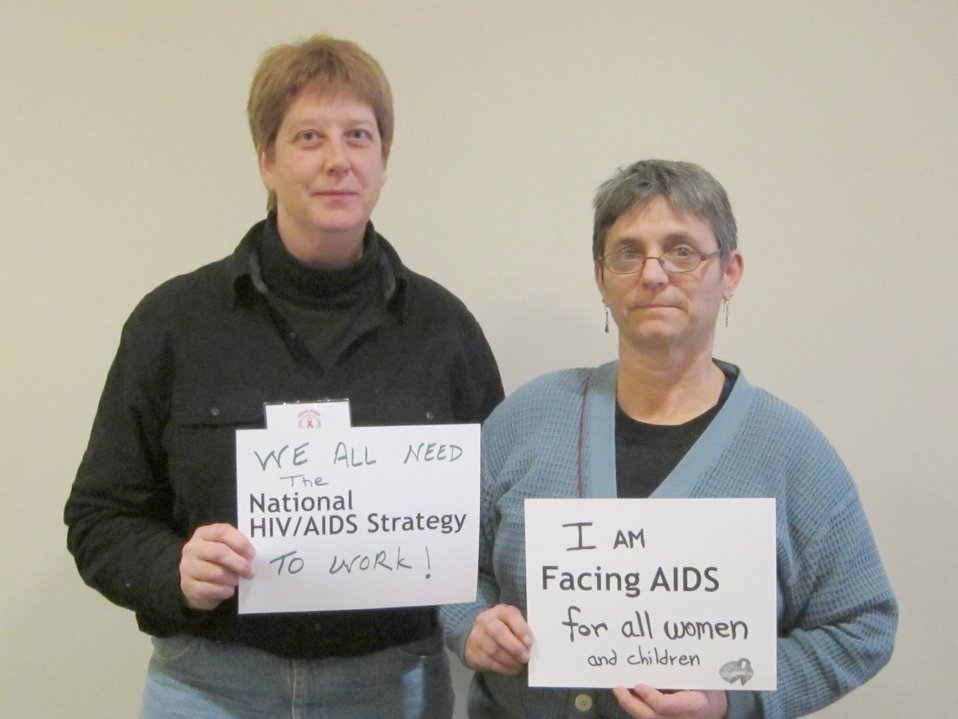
We all need the National HIV/AIDS Strategy to work. I am Facing AIDS for all women and children.